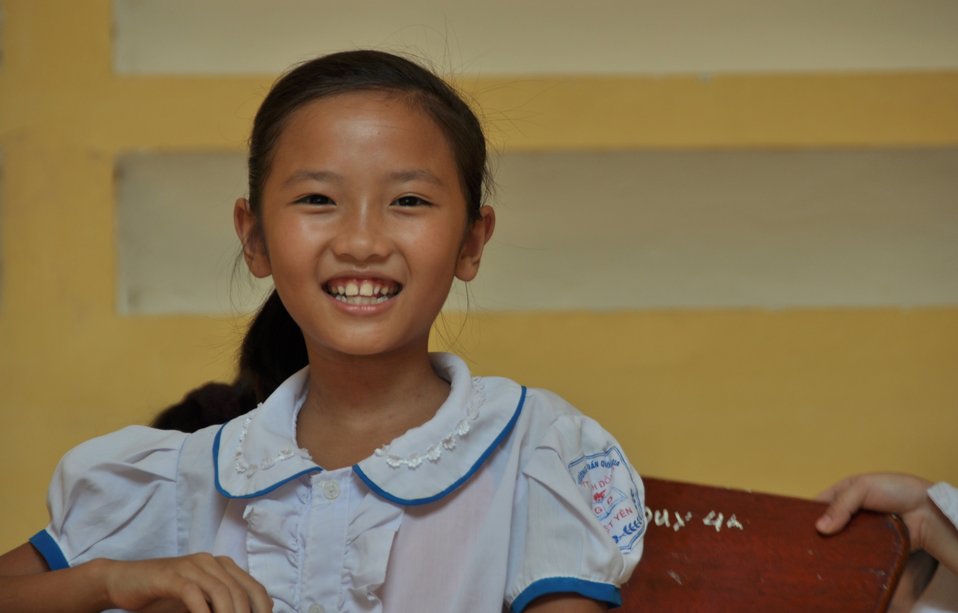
USAID supports deworming education and medication distribution in Bac Giang Province

May 20, 2013